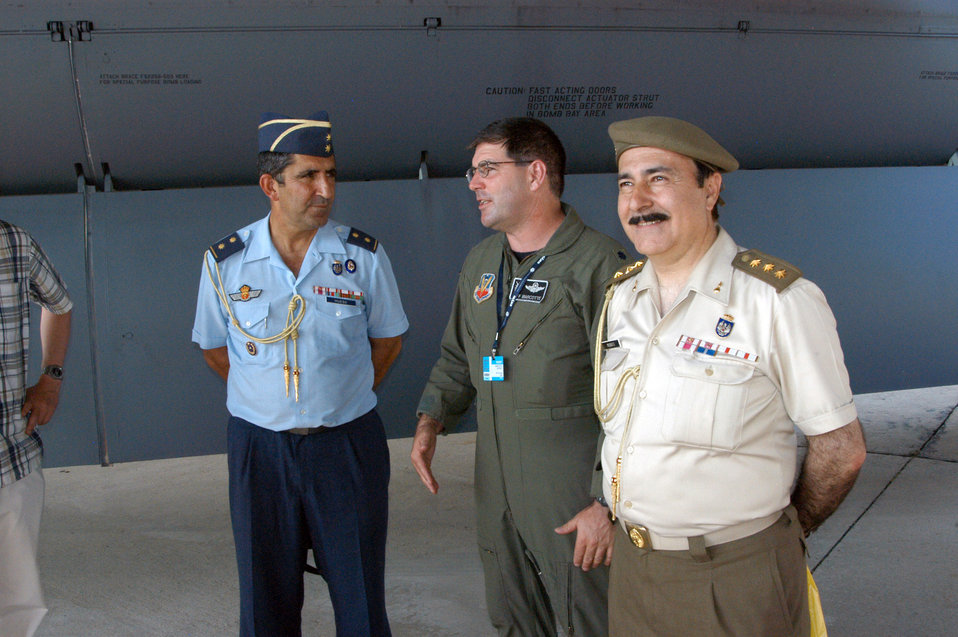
Air Force helps foster American, Russian relations

Spanish Lt. Col. Vicente Hueso Garcia (left) and Spanish Col. Manuel Morato Ferro talk with Lt. Col. Jeff Marcotte about the B-52 Stratofortress Aug. 22 during the Moscow International Air Show at Ramenskoye Airfield in Zhukovsky, Russia,. The Spanish officers are Spanish attaches to Russia, and Colonel Marcotte is from the 2nd Bomb Wing at Barksdale Air Force Base, La.